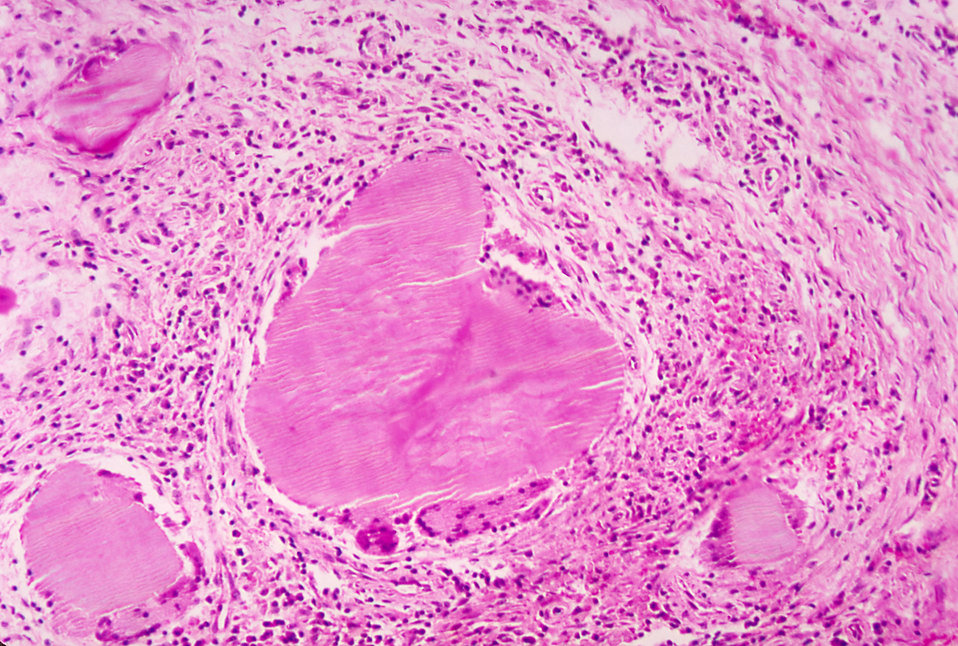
This is an actinomycotic mycetomatous granule due to the bacteria Streptomyces somaliensis.